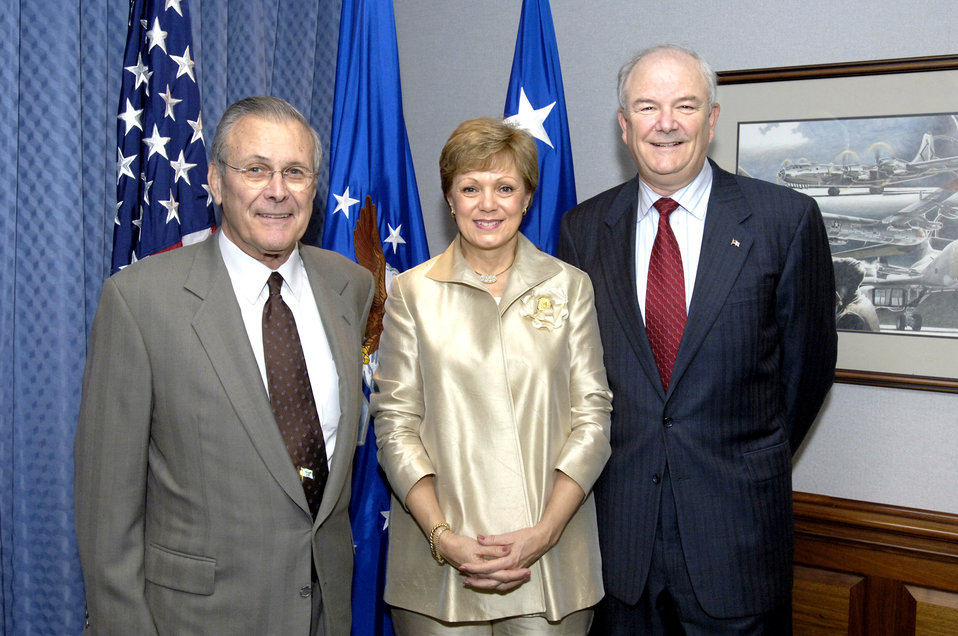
New SECAF

THE PENTAGON, Va. (AFPN) -- Secretary of Defense Donald H. Rumsfeld (left) poses for a photo with newly appointed Secretary of the Air Force Michael W. Wynne and his wife Barbara. Mr. Wynne was sworn into office on Nov. 2, during ceremonies held at the U.S. Air Force Academy in Colorado Springs, Co. It was decided, however, to hold a second ceremony in the Pentagon on Nov. 28, to allow his family and many of his Pentagon colleagues to share with him the joy of the appointment.